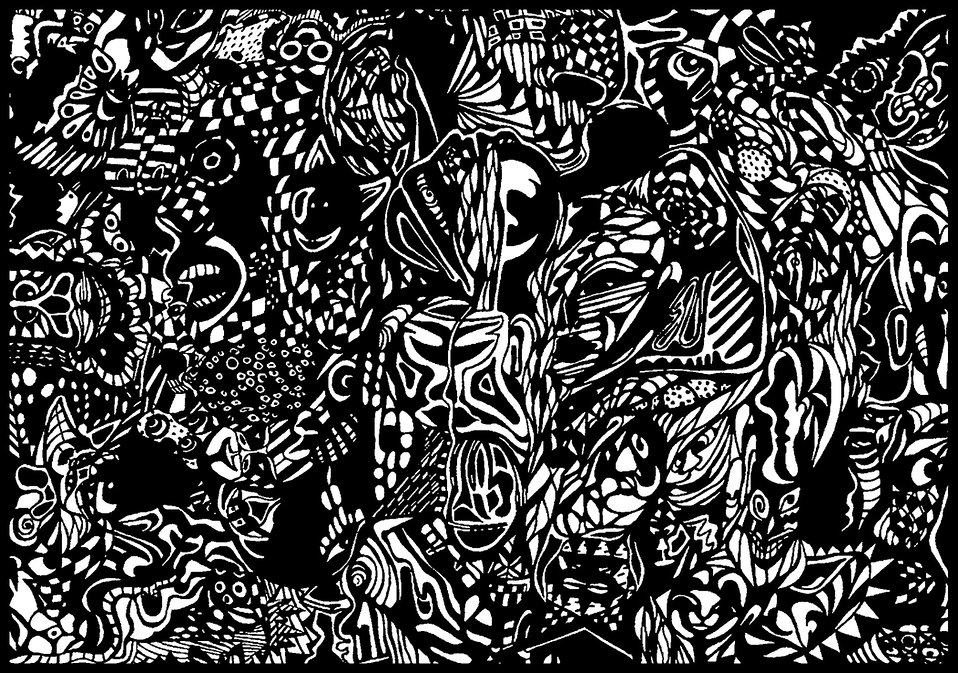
Black comic

Old comic drawing from my childhood.